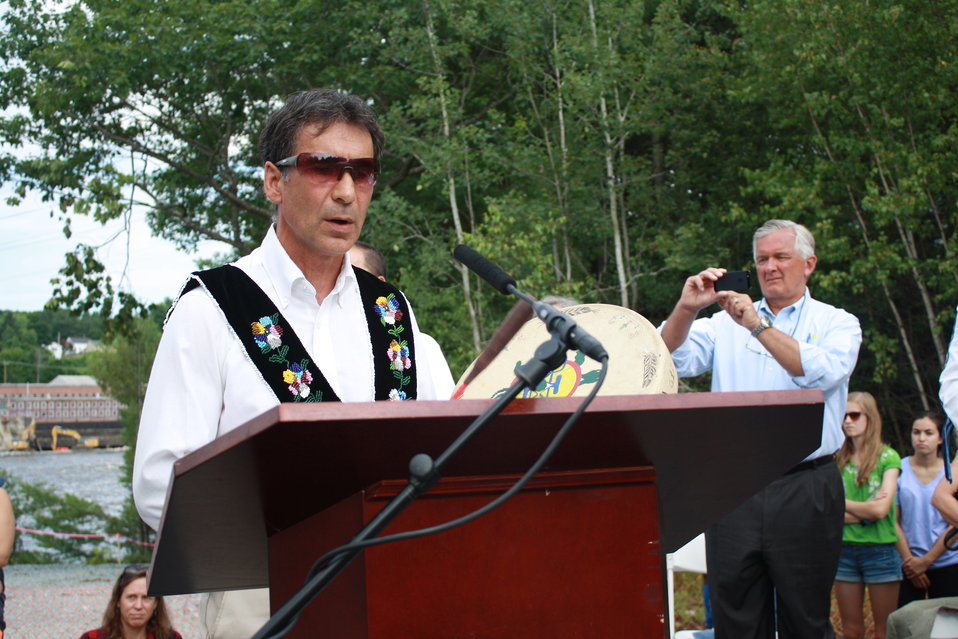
Veazie Dam Removal

Penobscot Indian Nation Elder Barry Dana prepares for the smudging ceremony.